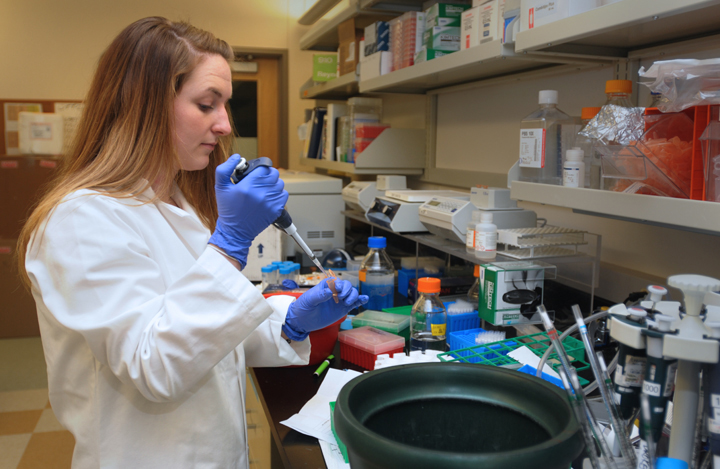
IRP Researcher

'Emily Simons-Wires, pre-doc IRTA . She is preparing DNA samples for analysis.”